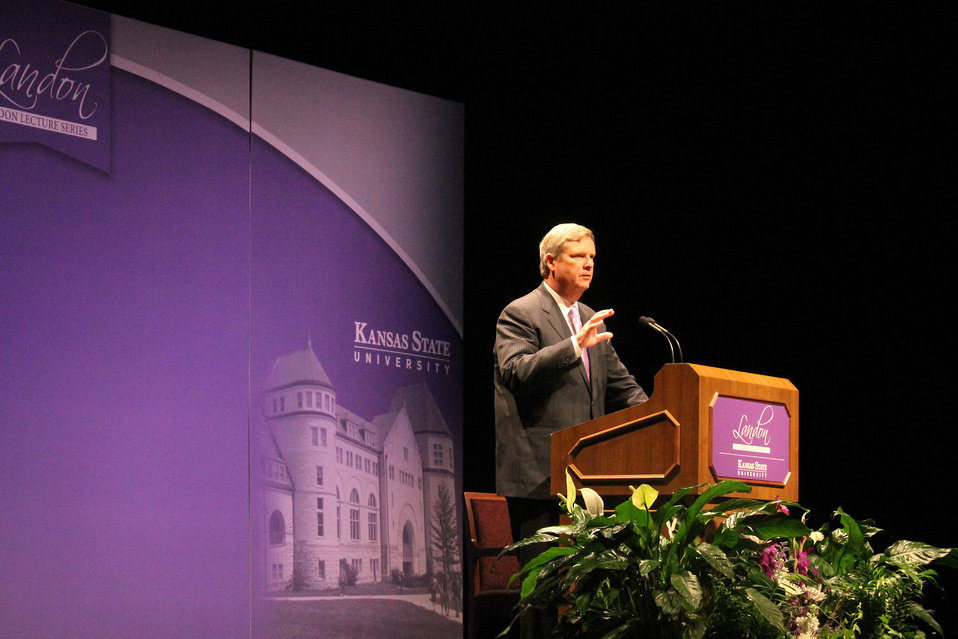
Agriculture Secretary Tom Vilsack spoke at the Kansas State University’s Spring 2012 Landon Lecture on “Why America Needs Agriculture.” The prestigious Landon Lecture Series began in 1996 and is hosted in honor of Governor Alfred M. Landon. Three to five of the country’s leading personalities appear on the Landon Lecture platform each academic year and are drawn from the public arena of world-renowned politicians, journalists, cabinet members and other prominent figures involved in current public issues. The lectures are given in the university’s McCain Auditorium and are attended by Kansas State students, faculty and alumni, as well as the general public. The event took place at Kansas State University, in Manhattan, KS, on Tuesday, April 10, 2012.